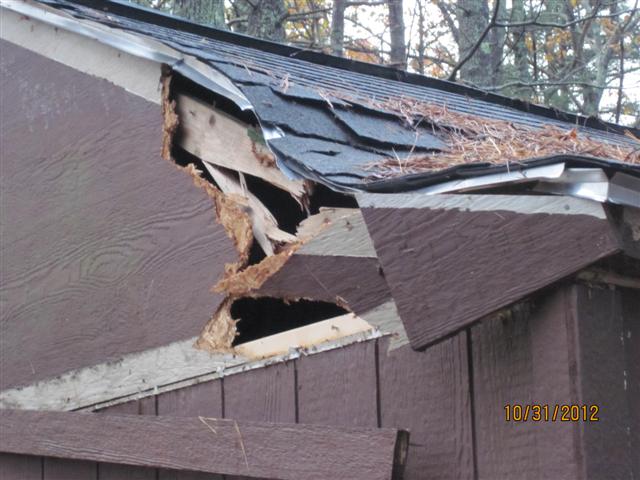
Hurricane Sandy hit Rachel Carson National Wildlife Refuge (RI)

The fire shed at headquarters suffered impact from a falling tree that destroyed a corner of the roof.